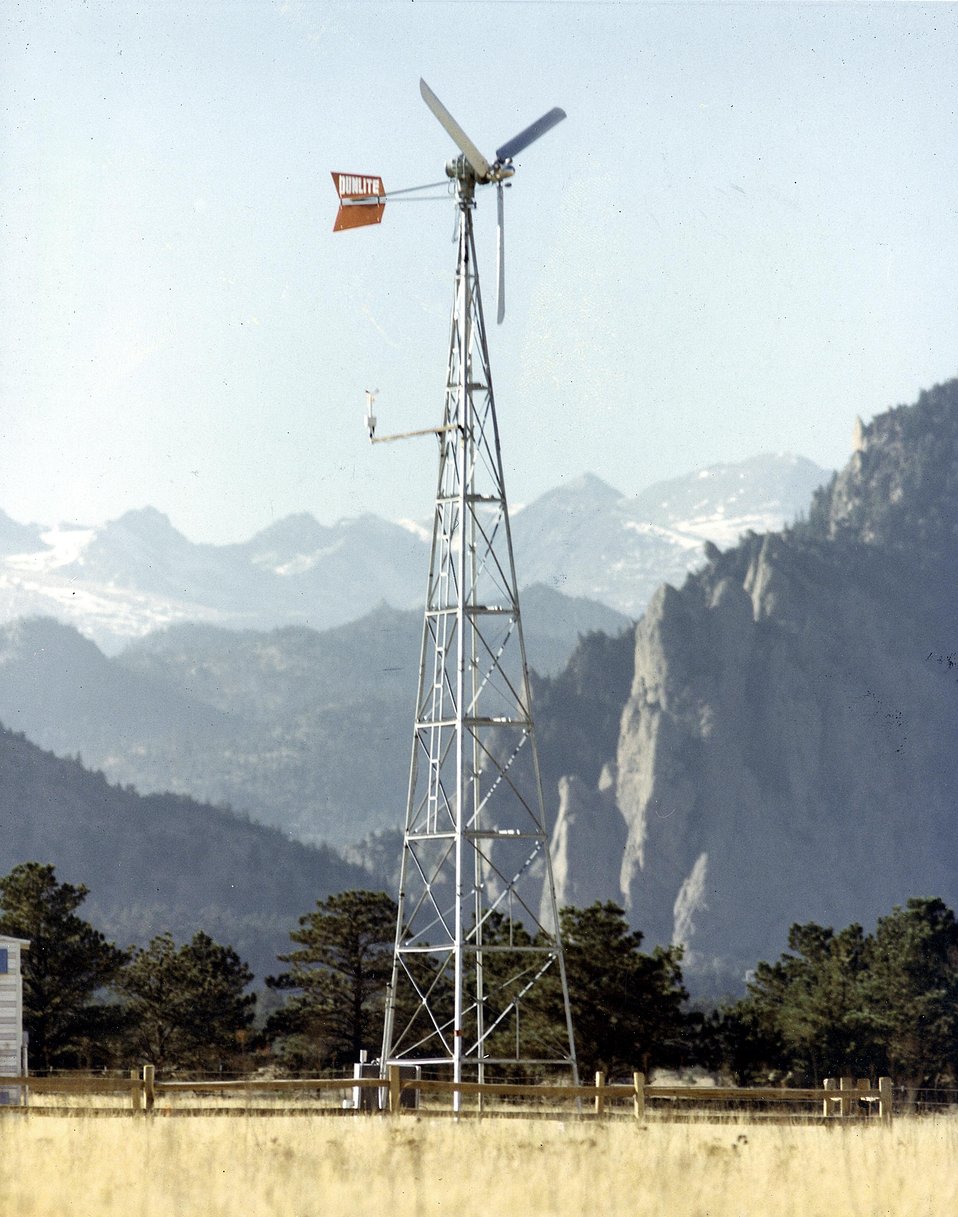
Dunlite 2KW. c.